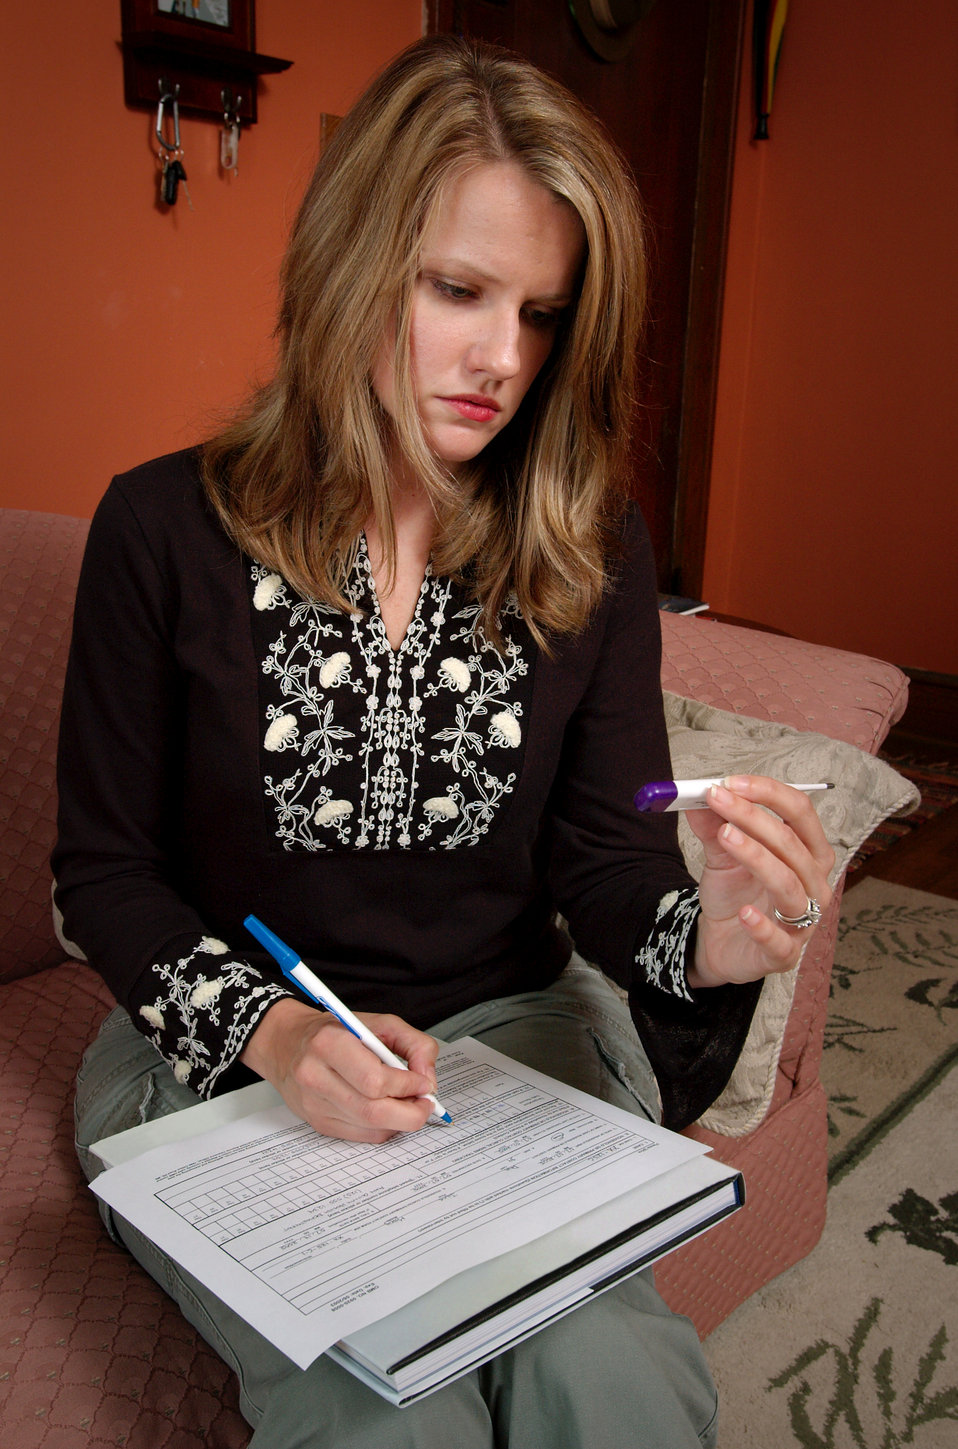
This photograph depicted a woman who was reading a modern, battery-powered oral thermometer, used in order to measure her body temperature. She was also recording the reading, by writing down the value on a health survey form. In order to return an accurate reading, this particular type of thermometer needed to be placed beneath the user's tongue, for a set amount of time, beeping when the ambient, sublingual temperature was reached.